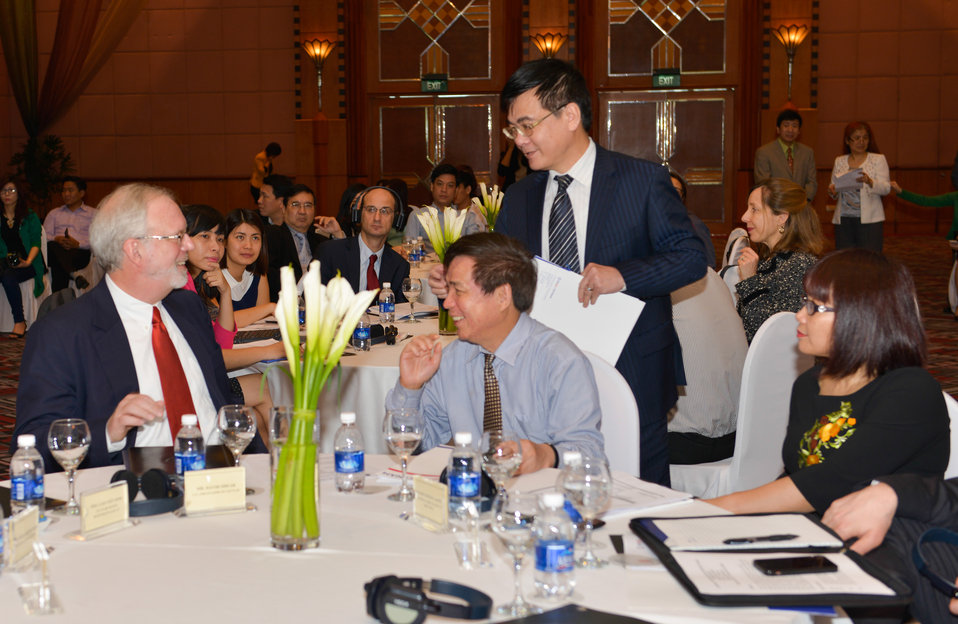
U. S. Ambassador David Shear (left) talks to Vietnam’s Vice Minister of Justice Hoang The Lien

Hanoi, April 8, 2014.